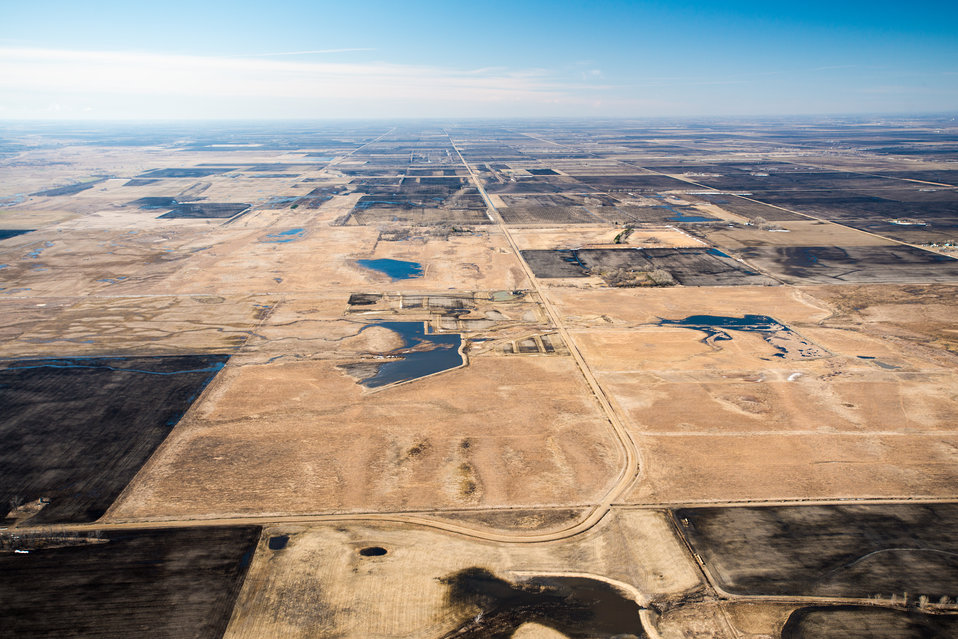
Ehlert North U.S. Department of Agriculture (USDA) Natural Resources Conservation Service (NRCS) Wetland Reserve Program (WRP) in Wilkin County, MN, on Tuesday, April 30, 2013. For information about this and other programs from the USDA Red River Basin Initiative (RRBI) please see www.mn.nrcs.usda.gov/news/features13/RRBI.html.